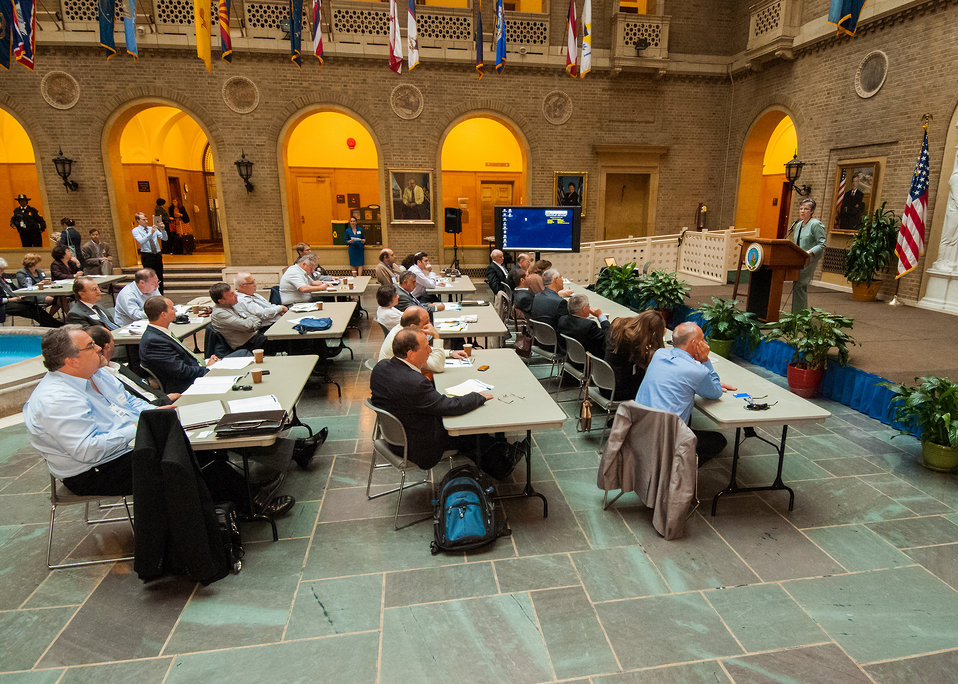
Agriculture Under Secretary for Research, Education and Economics (REE) Dr. Catherine Woteki welcomes participants to the U.S.-Israel Bio-Challenge Symposium at the U.S. Department of Agriculture (USDA) in Washington, D.C. on Thursday, Apr. 18, 2013.